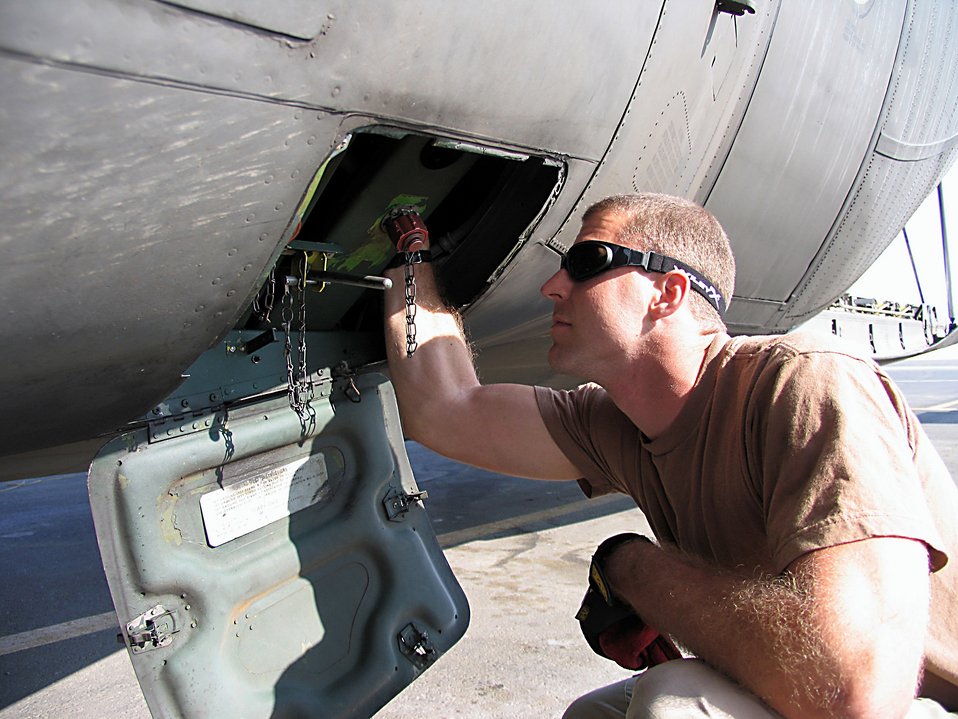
Maintainers keep aircraft flying

SOUTHWEST ASIA (AFPN) -- Senior Airman Tye Grasshoff checks the hydraulic system as part of the pre-flight inspection. Airman Grasshoff is with the 368th Expeditionary Aircraft Maintenance Squadron.